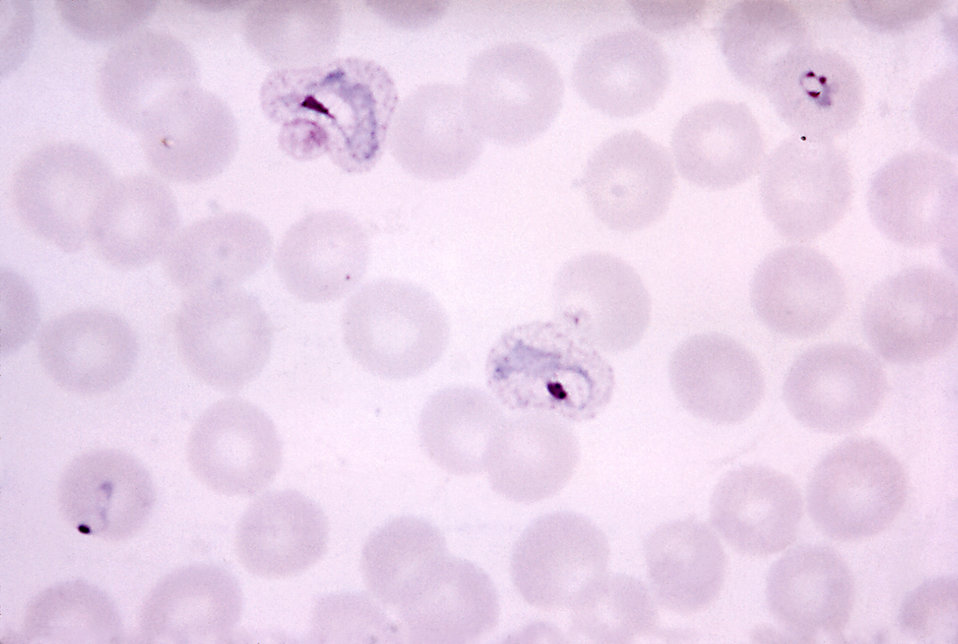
This thin film micrograph reveals growing P. vivax trophozoites, and 1 ring with 3 chromatin dots; Mag. 1125X.